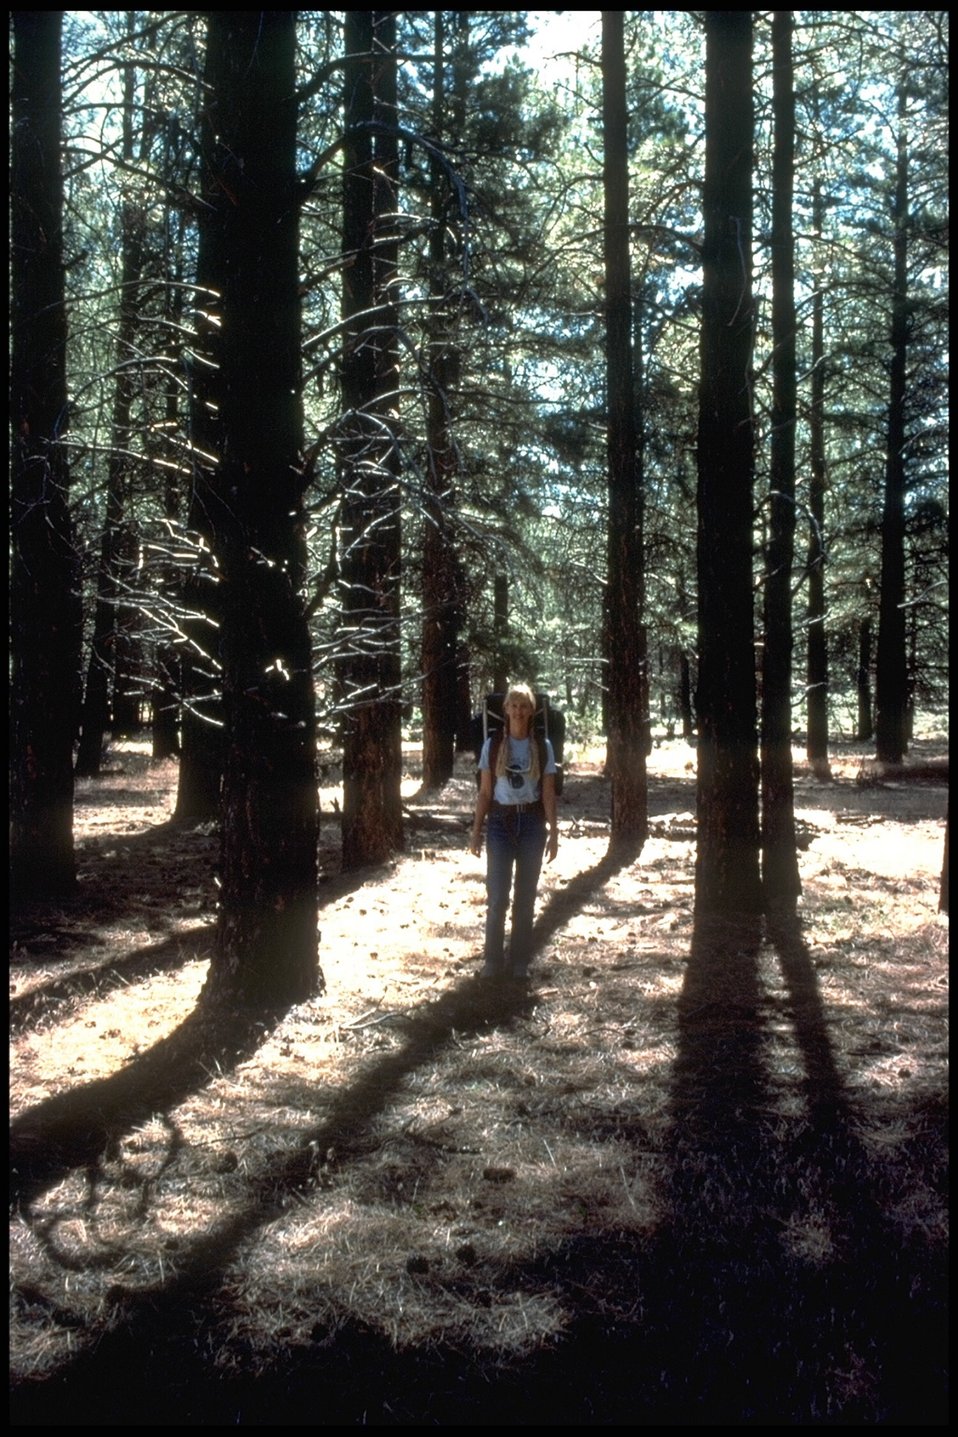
A hiker enjoys the shade in a Forest in the Mt. Trumball area.